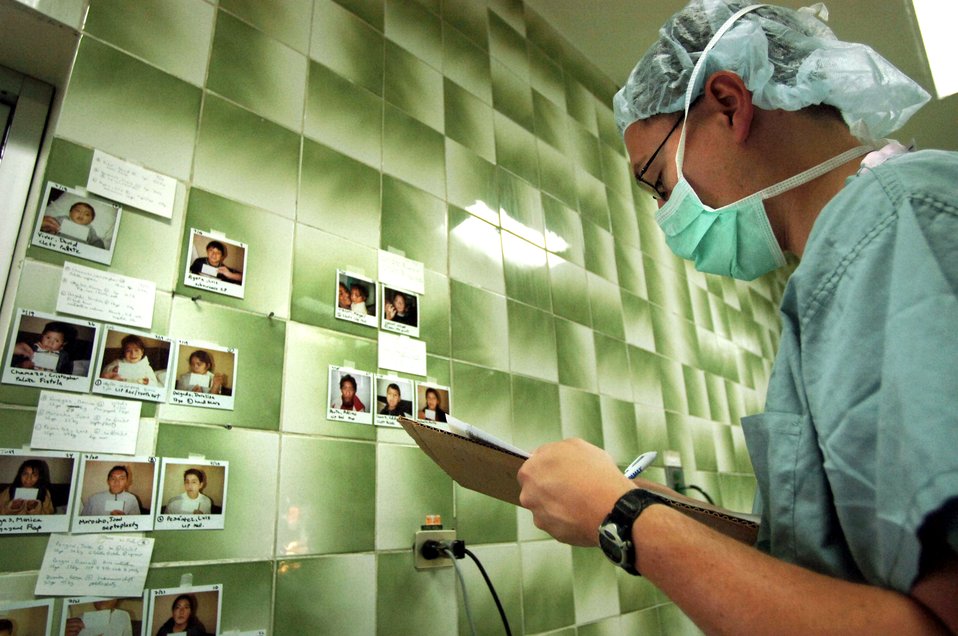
Air Force medics conduct plastic surgery clinic

CUENCA, Ecuador -- Maj. (Dr.) McClure Jones keeps record of patients still requiring surgery. A seven-person plastic surgery team from Wilford Hall Medical Center at Lackland Air Force Base, Texas, is providing free corrective surgeries to Ecuadorian civilians as part of a 12-day medical readiness training exercise.